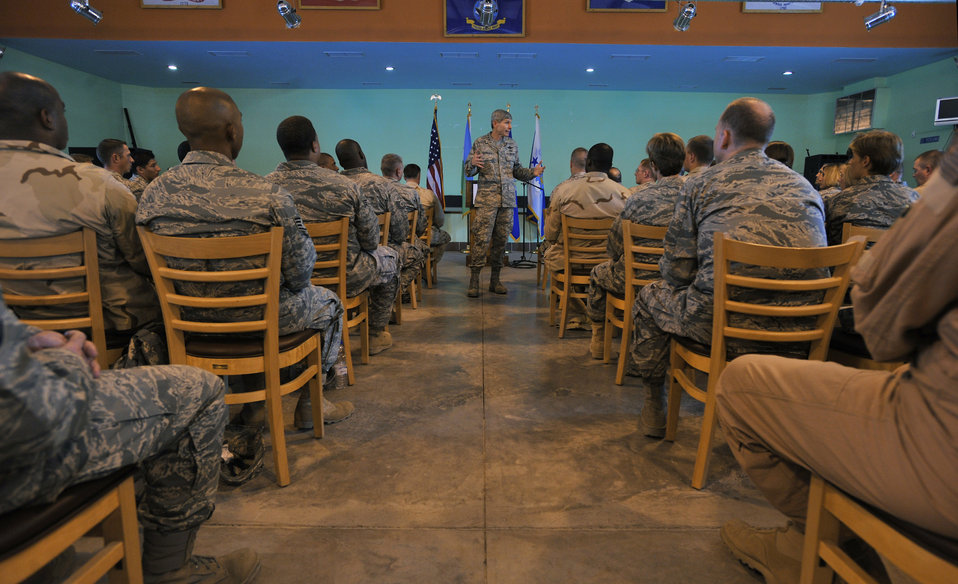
Chief of staff wraps up Middle East tour at Joint Base Balad

Air Force Chief of Staff Gen. Norton Schwartz speaks to Airmen assigned to the Combined Joint Task Force-Horn of Africa, during an Airman's call at Camp Lemonier, Djibouti, Oct. 23. General Schwartz used the event to answer questions regarding the future of the Air Force and thank them for their efforts in the war on terrorism. The visit marked General Schwartz's first trip to the Horn of Africa since his appointment as the Air Force chief of staff.